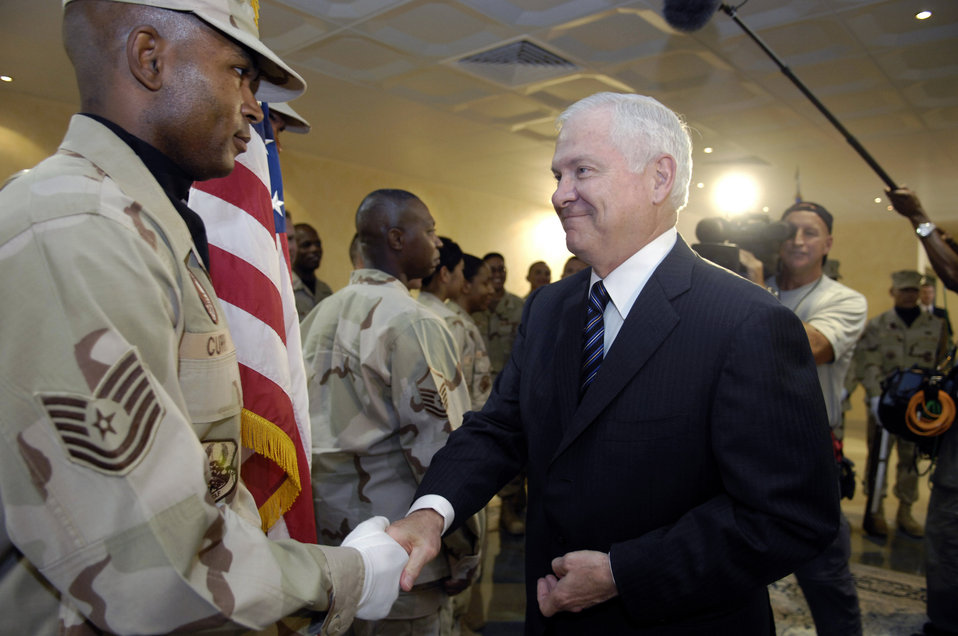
Top-level meeting

Secretary of Defense Robert M. Gates shakes hands with Airmen at a forward operating location in Southwest Asia Aug. 2. Secretary Gates described his four-day trip as